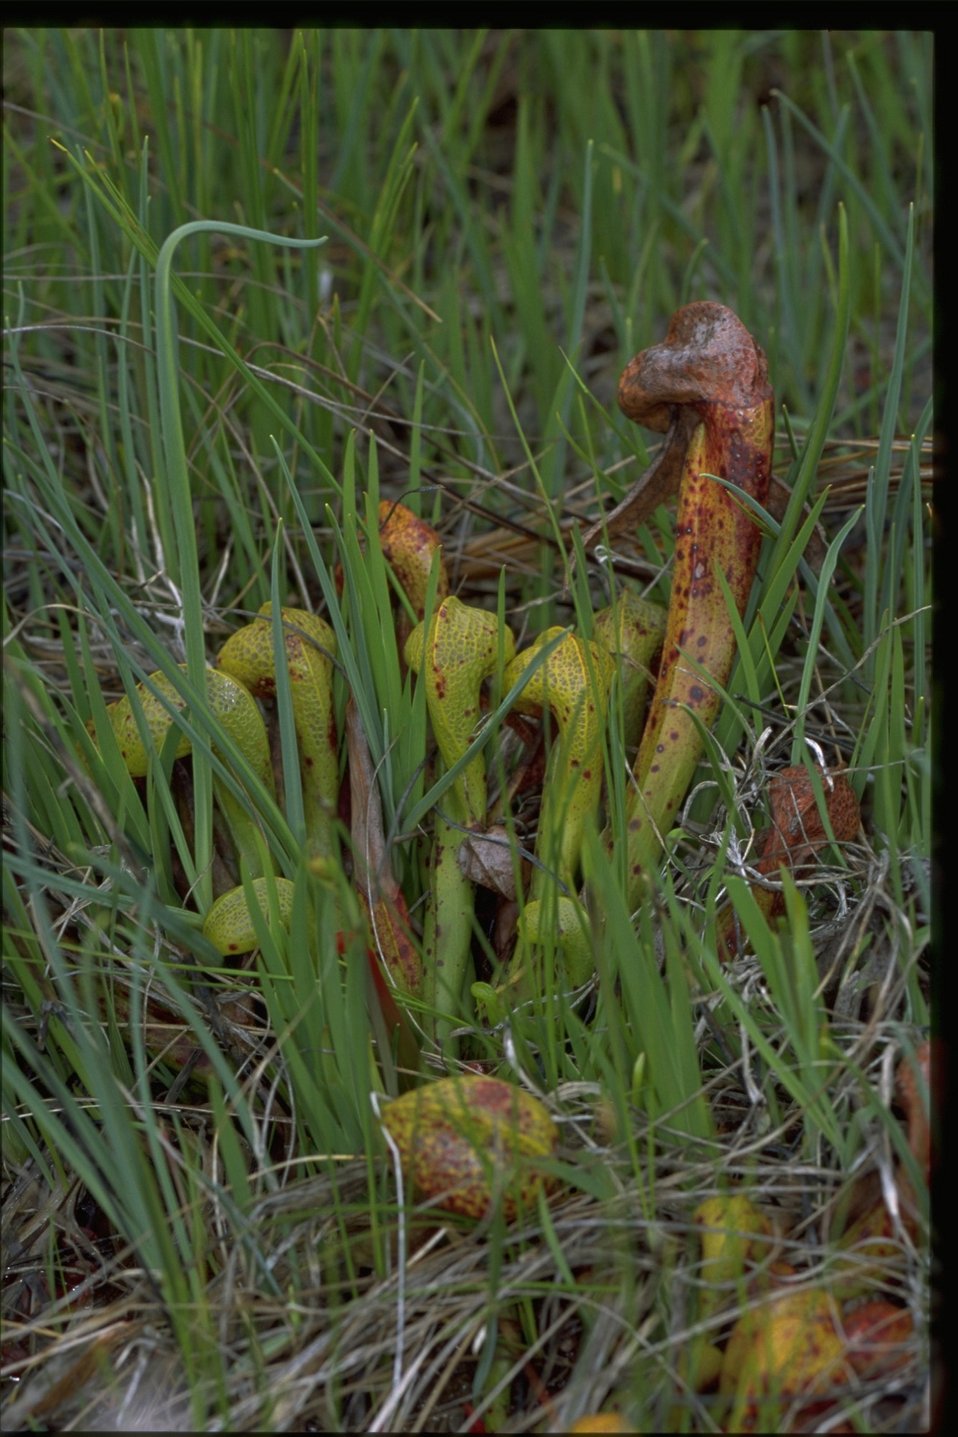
Medium shot of Cobra Lily, Darlingtonica californica.